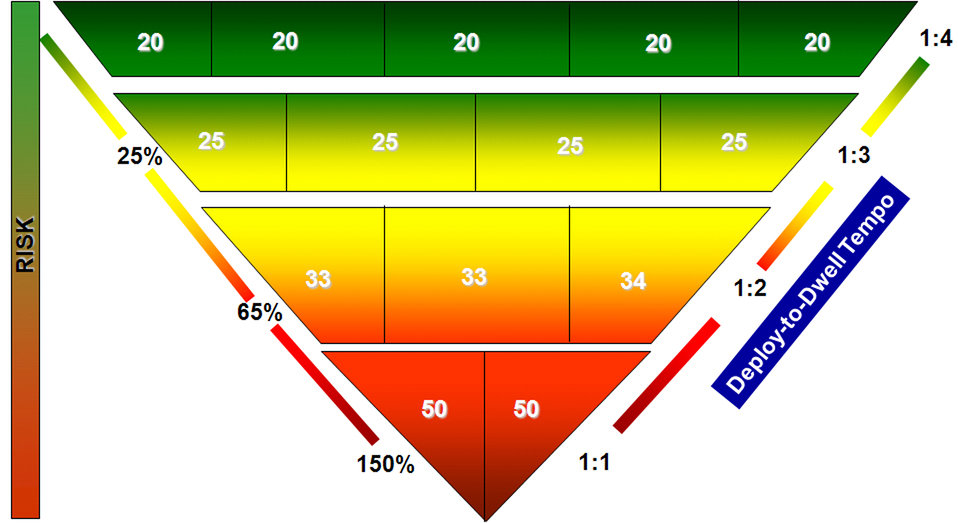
AEF evolves to reflect dwell-ratios stressed career fields

This graphic represents the air and space expeditionary force deploy-to-dwell tempo. Called AEF Evolution, each career field will fall into a different category of deployment cycles. The deployment categories are called tempo bands. Air Force officials have created five tempo bands: A through E. Tempo Band A reflects the original AEF cycle of a 1:4 dwell ration based on 120-day deployments. Bands B through E are based on 179-day deployments. Tempo band B is a 1:4 dwell ratio -- or six months deployed 24 months home. Tempo band C is a 1:3 dwell, band D is a 1:2 dwell and band E, reserved for the most stressed career fields, is a 1:1 dwell, or six months out, six months in.